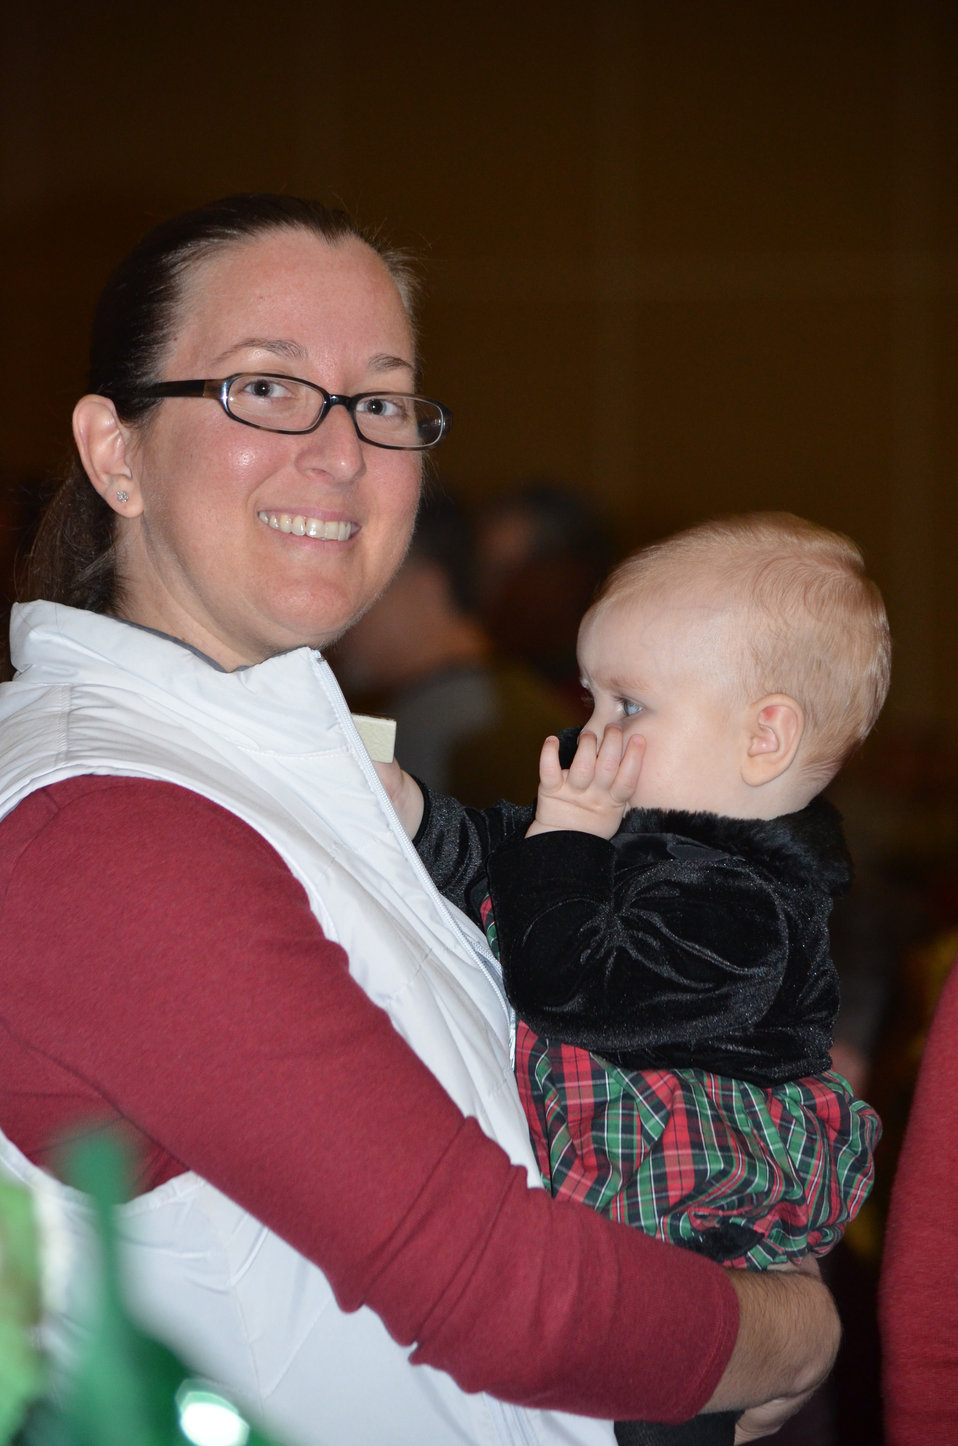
Sacramento District Holiday Party 2011